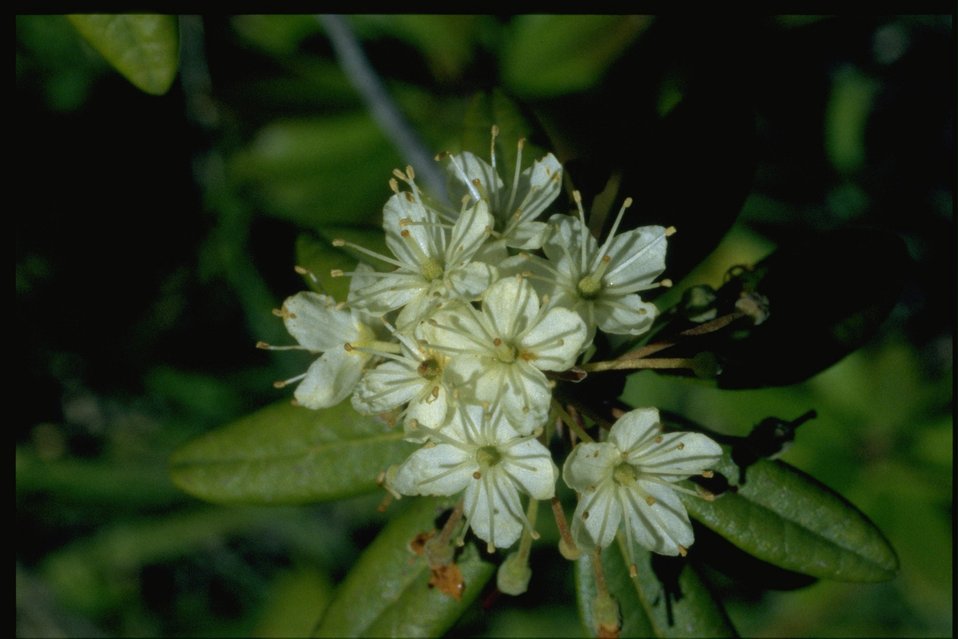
Closeup shot of Ledum glandulosum.